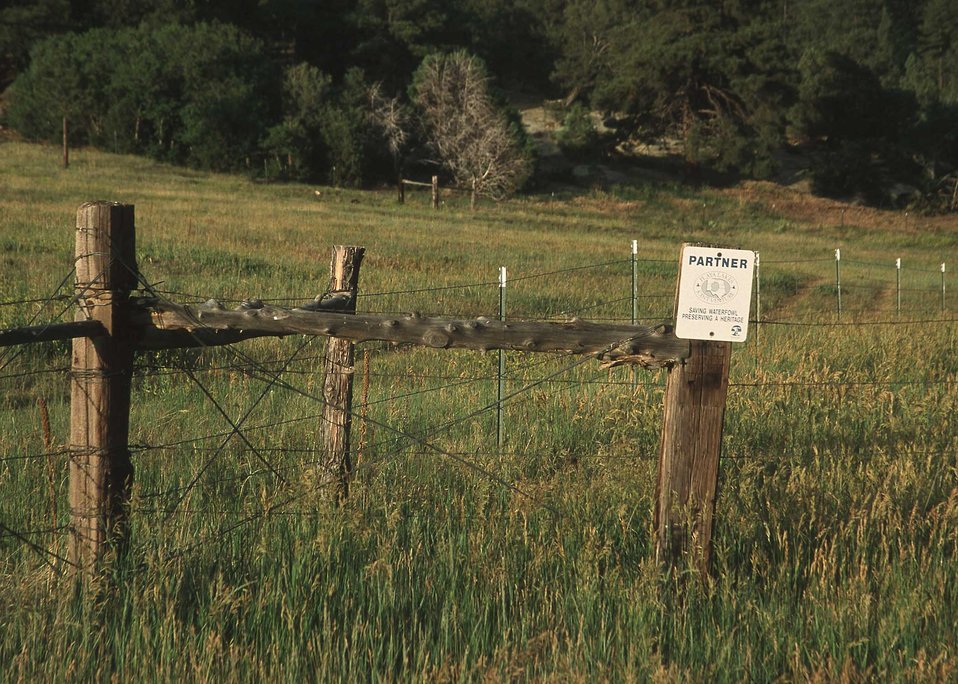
Playa Lakes Joint Venture Partnership sign.